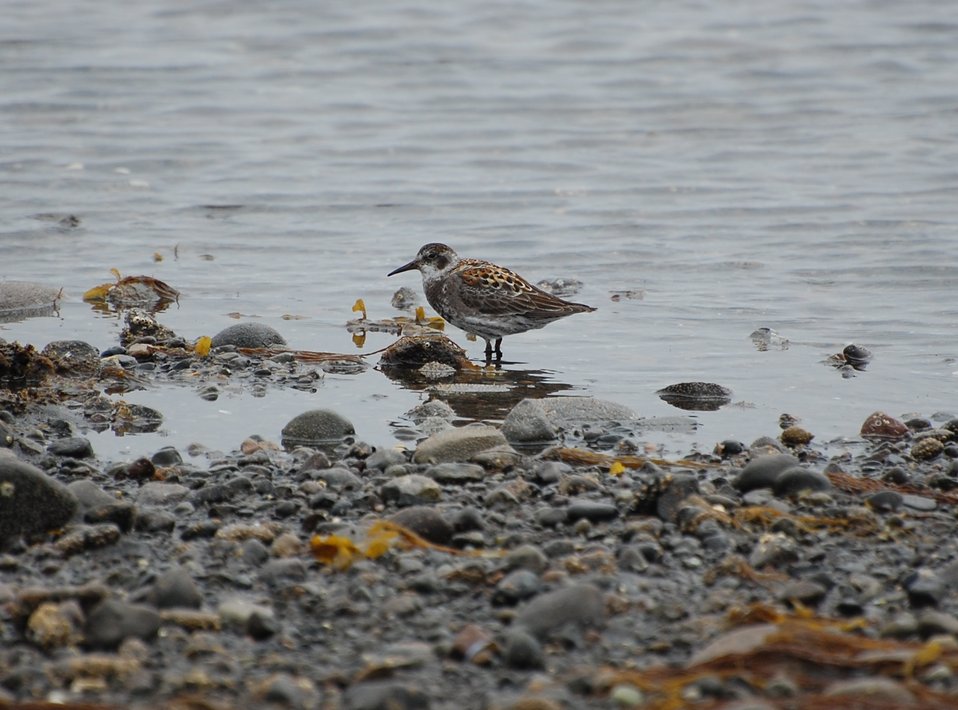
Rock Sandpiper

Kinzarof Lagoon, Izembek National Wildlife Refuge
Photo by Kristine Sowl,
USFWS, Public Domain